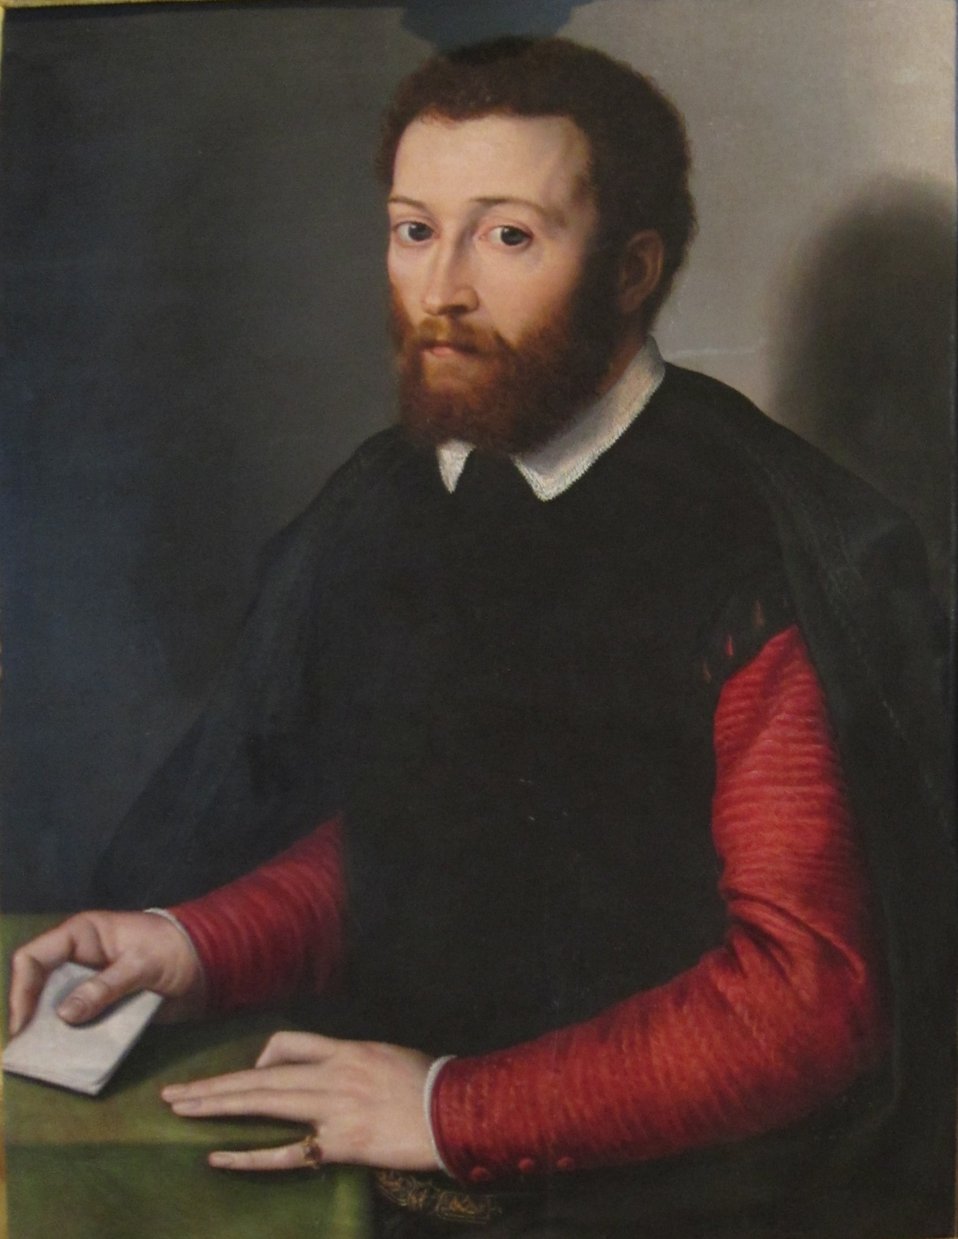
'Portrait of a Man Holding a Letter' attributed to Francesco Salviati, Dayton Art Institute